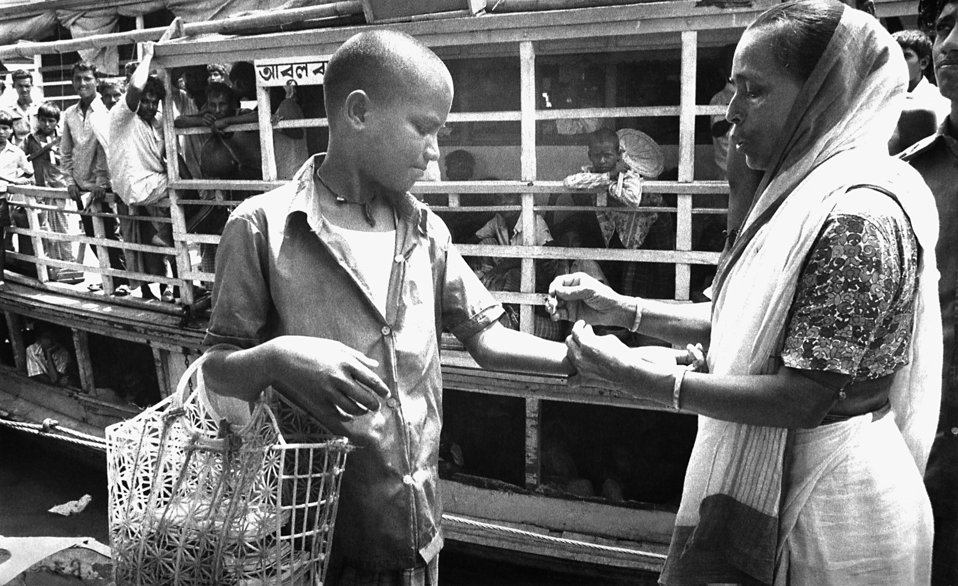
On this day in 1975, this boy was being vaccinated by a local volunteer smallpox eradication team member as he was getting ready to board a large riverboat from this riverside ghat. The stairway leading down to the embarkation river landing is known as a ghat, and is a gathering place prior to travel, or awaiting river travelers to disembark. River travel is integral to the Bangladesh riverine culture, therefore, being stationed at the ghat was an excellent strategy for one in search of information from both local residents, and transient citizens.